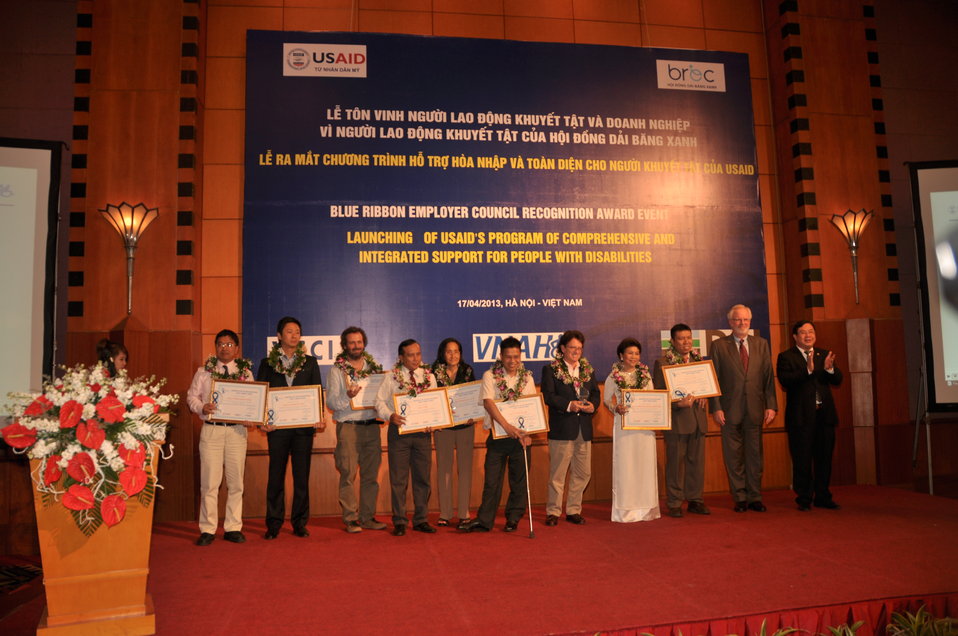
USAID Mission Director Joakim Parker awards employees with disabilities

Hanoi, April 17, 2013